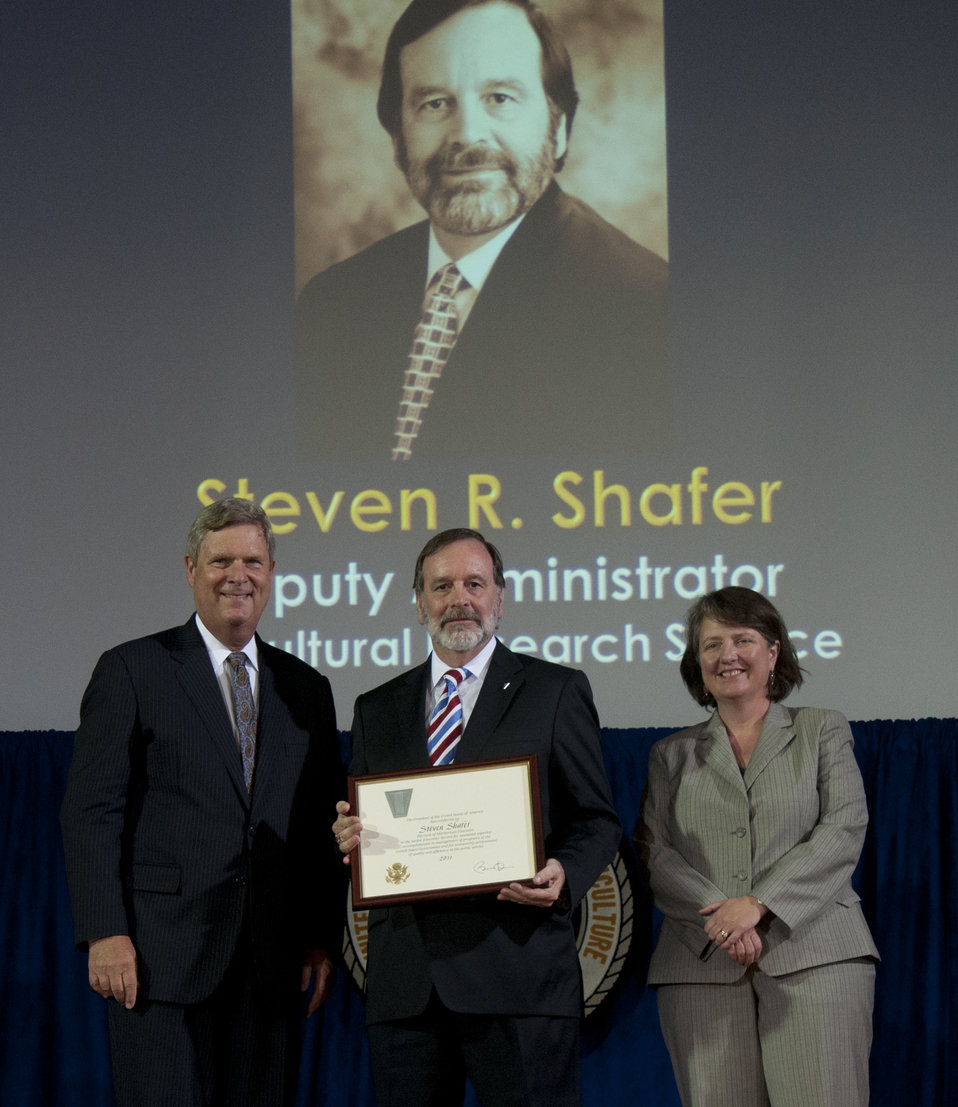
Agriculture Secretary Tom Vilsack and Agriculture Deputy Secretary Kathleen Merrigan present the Meritorious Executive Award to Agricultural Research Service (ARS) Deputy Administrator Steven R. Shafer at the U.S. Department of Agriculture (USDA) 64th Annual Honor Awards Ceremony in Washington, D.C. on Wednesday, Sept. 12, 2012. The Meritorious Executive award in the Senior Executive Service is for sustained superior accomplishment in management of programs of the U.S. Government and for noteworthy achievement of quality and proficiency in the public service.